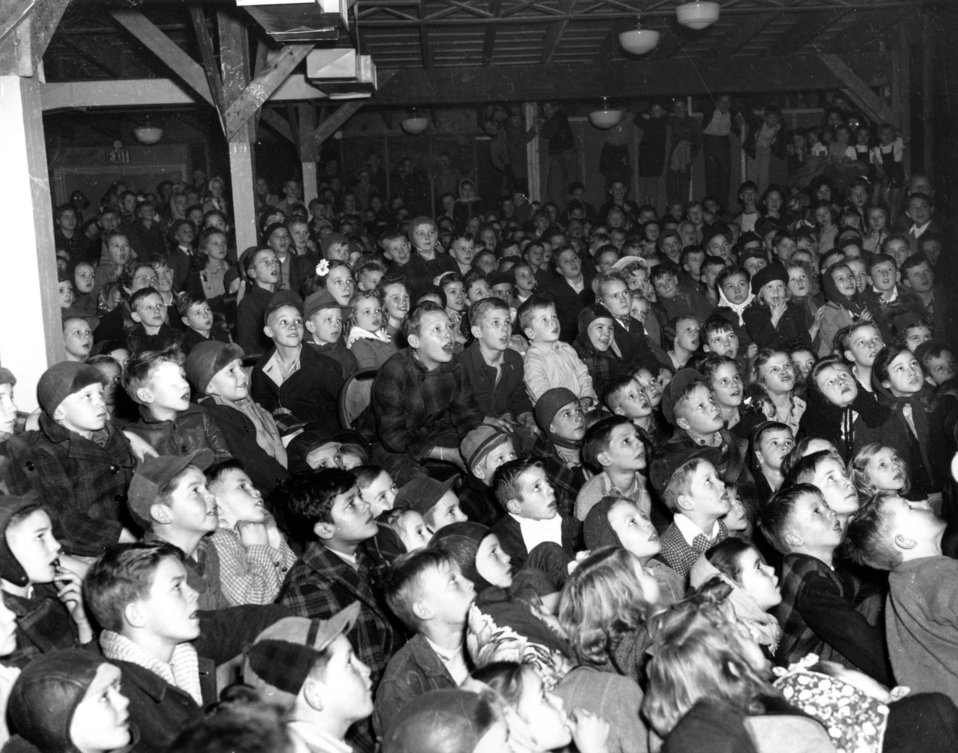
Recreation at Oak Ridge